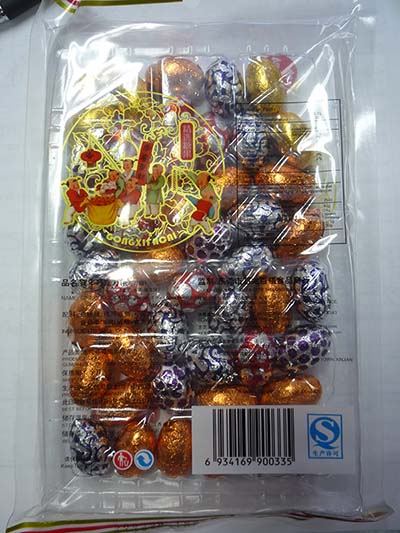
RECALLED – Gong xifacai gift chocolates

June 17, 2014 – Product Recall – Domega NY International Co Ltd Issues Allergy Alert On Undeclared Peanuts And Milk In Gong Xifacai Gift Chocolates.